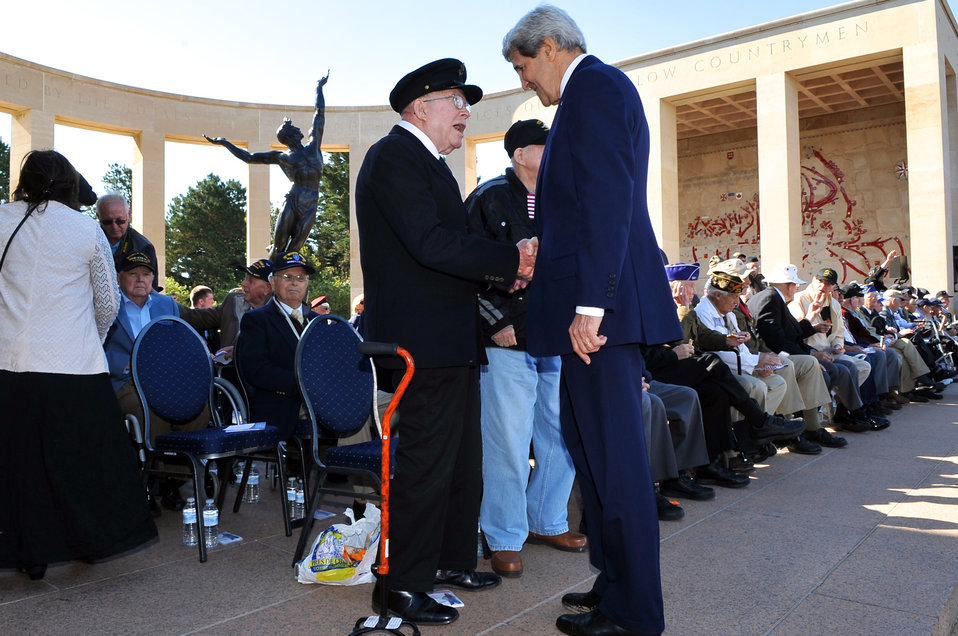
Secretary Kerry Meets D-Day Veteran Before 70th Anniversary Commemoration

U.S. Secretary of State John Kerry meets a D-Day veteran before the 70th anniversary commemoration in Normandy, France, on June 6, 2014.